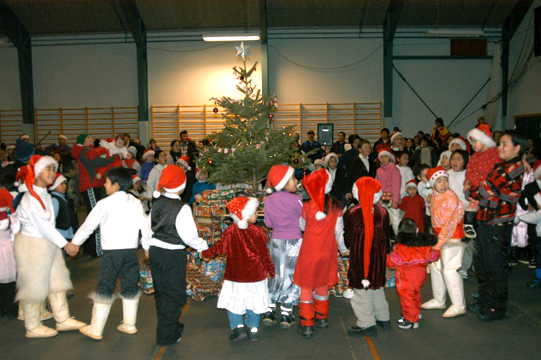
Thule Airmen bring Julemand to children

QAANAAQ, Greenland -- Children here dance around the Christmas tree just before opening gifts at the Julemand Celebration on Dec. 20. The gifts were provided by the Airmen of Thule Air Base.